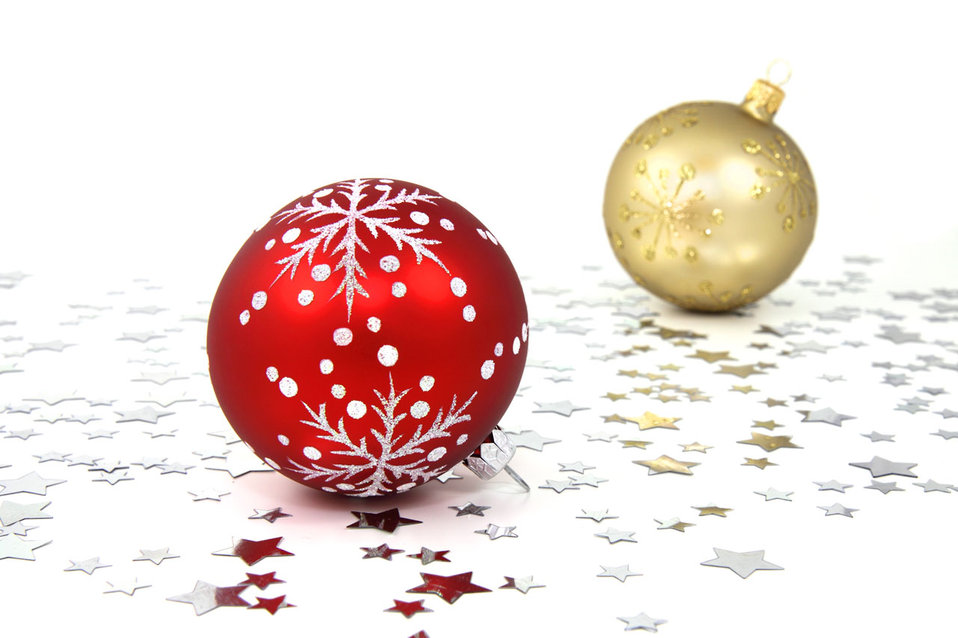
Christmas baubles

Red and golden christmas baubles with silver stars.